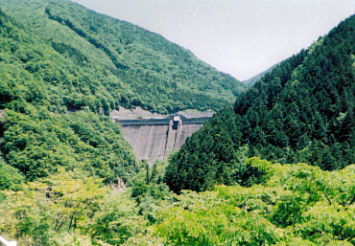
Dam